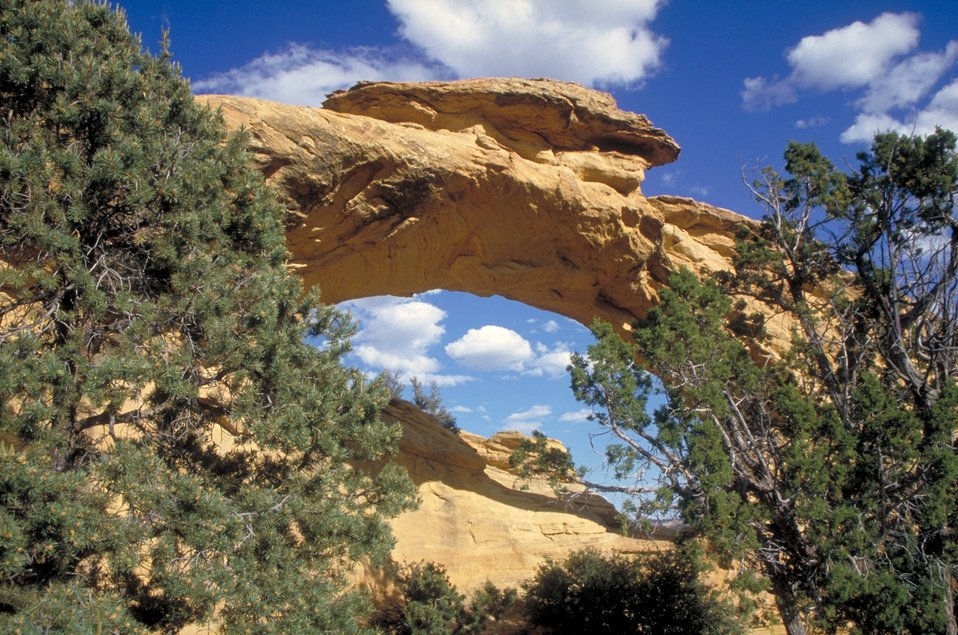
Dutchmans Arch, Head of Sinbad in the San Rafael Swell